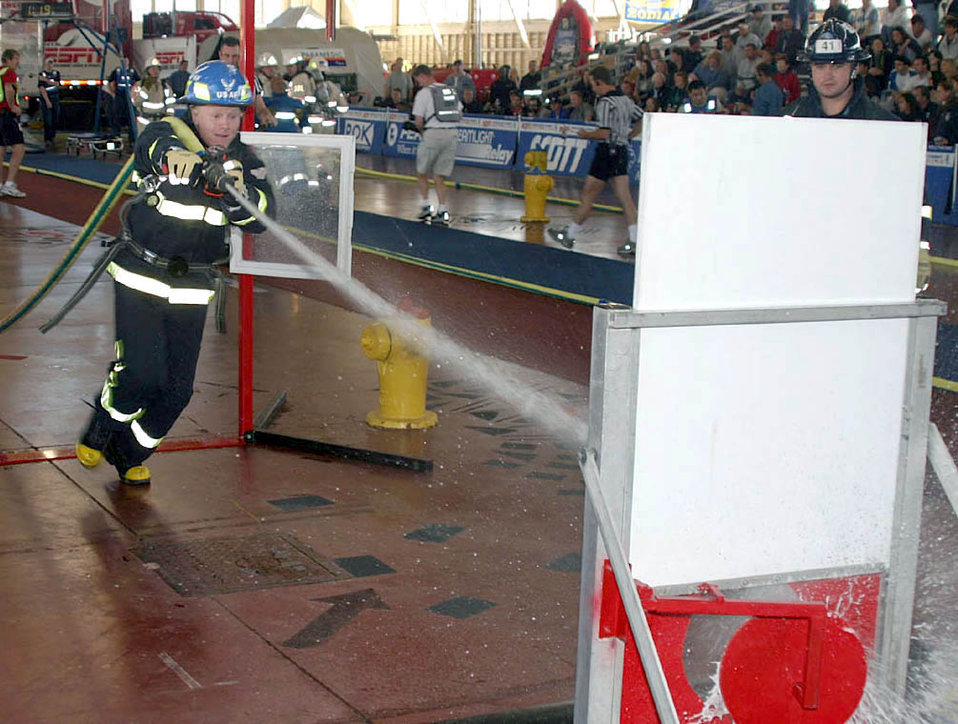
Putting out fires in Ottawa

OTTAWA -- Airman 1st Class Matthew Shipman drags a hose more than 100 feet during the 12th Annual World Firefighter Combat Challenge here. To test his accuracy, Shipman had to hit the target before tagging his teammate who then dragged a 175-pound dummy to the finish line. More than 100 firefighter teams competed in the five-day test of strength, endurance and speed which ended Nov. 8. Shipman is from Little Rock Air Force Base, Ark.